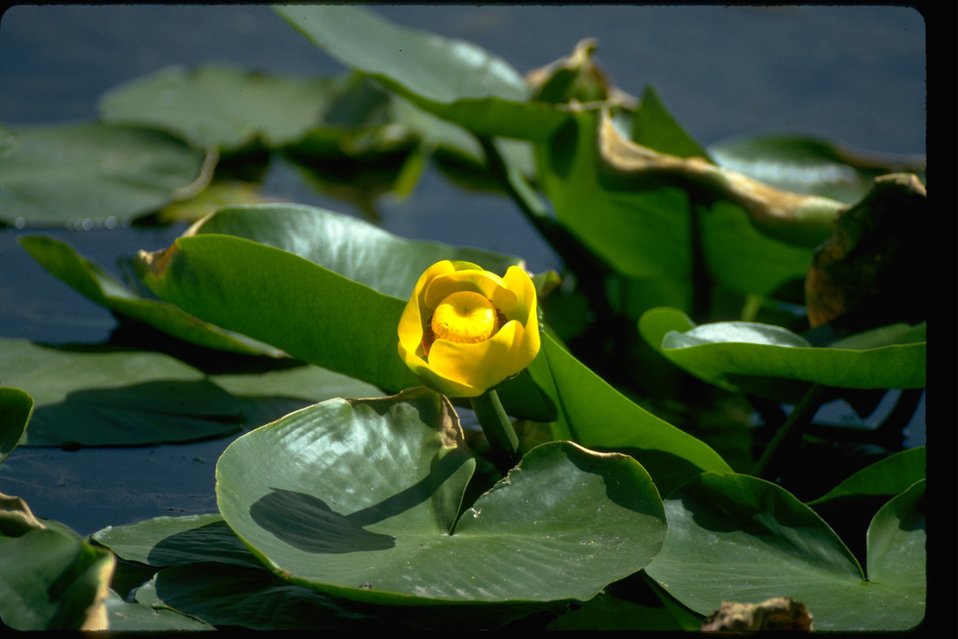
A Pond Lily found on Lily Lake near Steens Mountain in Southeast Oregon.